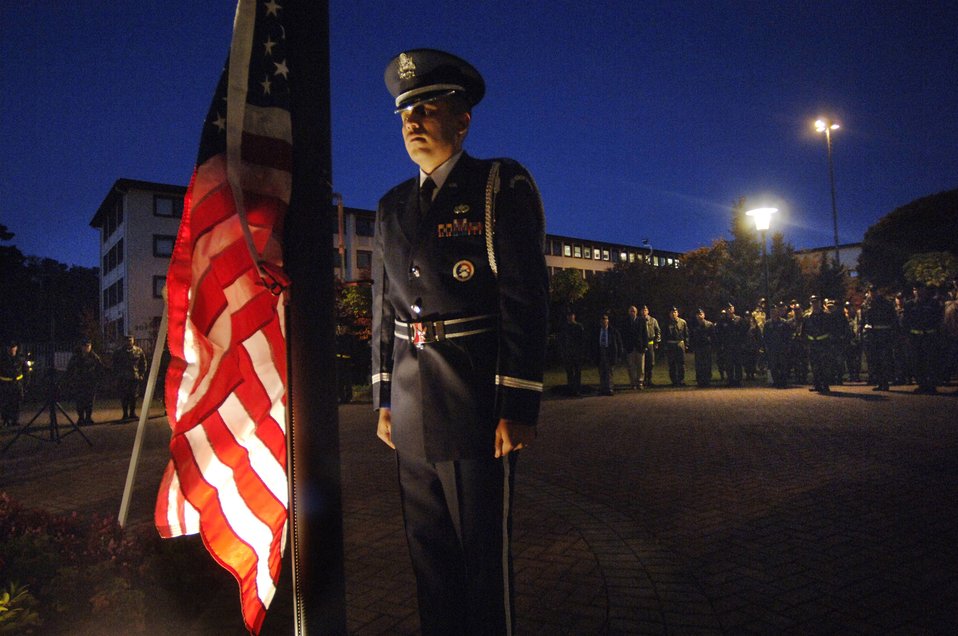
POW/MIA Recognition Day

Capt. Sergio Rios prepares to hoist the colors Sept. 21 in honor of National POW/MIA Recognition Day on Ramstein Air Base, Germany. The holiday is recognized on the third Friday of September to honor prisoners of war and those missing in action.